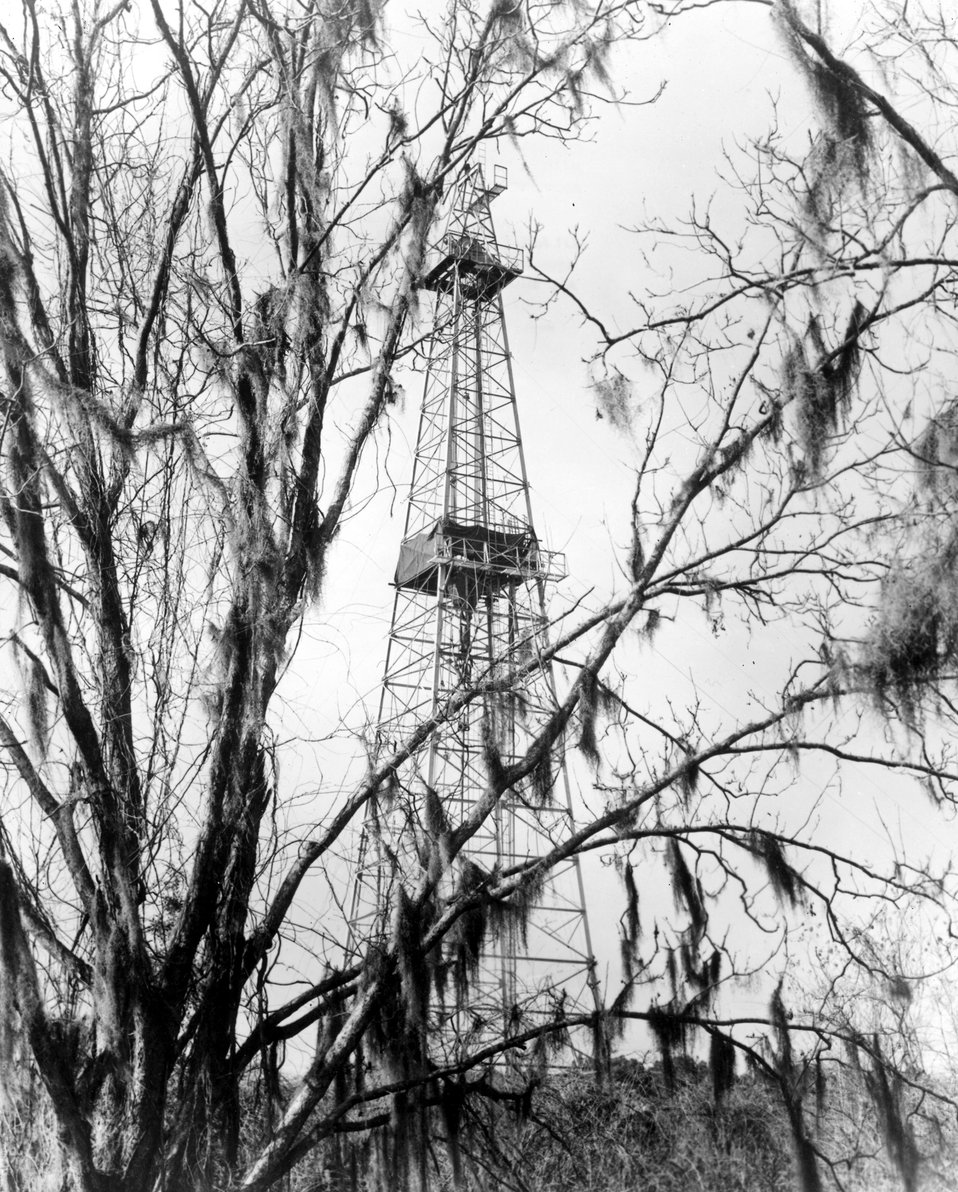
Oil rig. c. undated